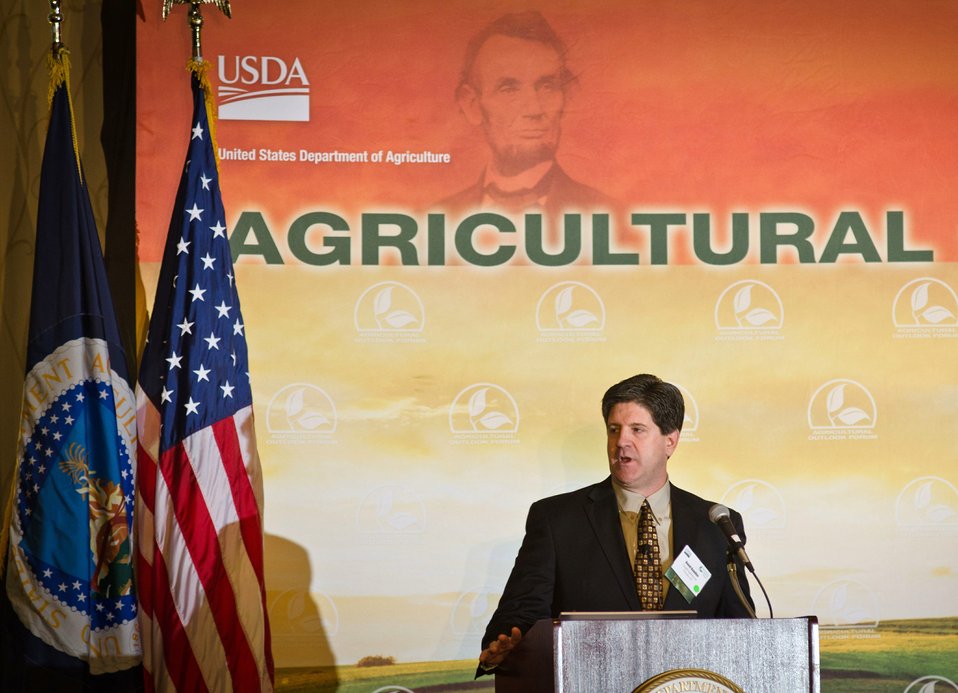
Cargil AgHorizons President David Baudler speaks at 2013 Agricultural Outlook Forum, held at the Crystal Gateway Marriott Hotel, Arlington, Virginia on Thursday, Feb. 21, 2013. This annual Forum brings together producers, policymakers, and business, government, and industry leaders to meet, exchange ideas, and discuss timely agriculture issues.